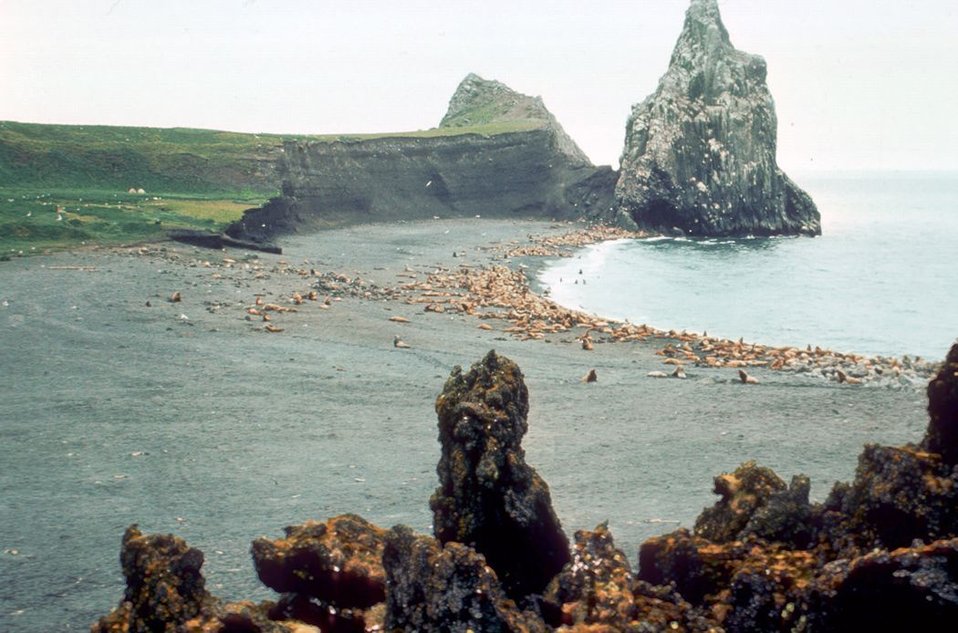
Alaska Maritime Refuge

Bogoslof Wilderness in the Alaska Maritime National Wildlife Refuge.